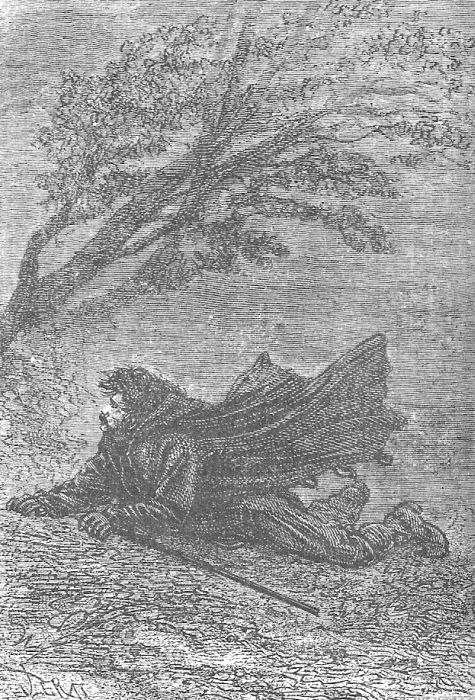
An illustration from Jules Verne's novel 'The Fur Country' (1871-72) drawn by Jules-Descartes Férat or Alfred Quesnay de Beaurepaire. Polski: Ilustracja powieści Juliusza Verne'a 'Wyspa błądząca' (także: 'W krainie białych niedźwiedzi', przekł. dosł.: 'Kraina futer'; 1871-72) autorstwa Julesa-Descartesa Férata lub Alfreda Quesnaya de Beaurepaire'a. Français : Jules Verne: 'Le Pays des fourrures' (1871-72), dessins par Jules-Descartes Férat ou Alfred Quesnay de Beaurepaire. Orginal description from the book: Français : « Sergent ! sergent ! où êtes-vous ? »